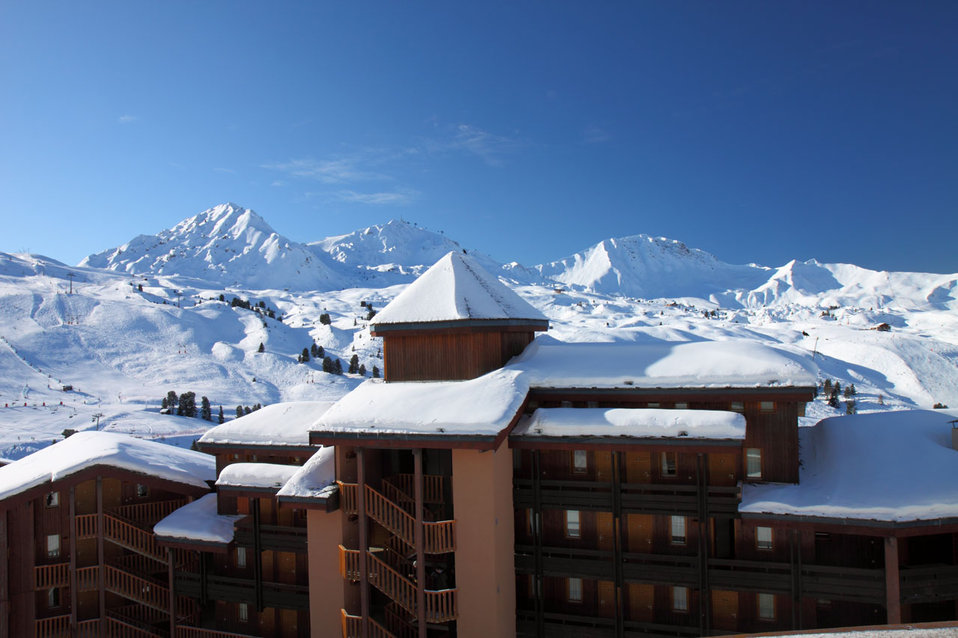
Hotel with mountains in winter

Hotel in belle plagne with mountains in winter.